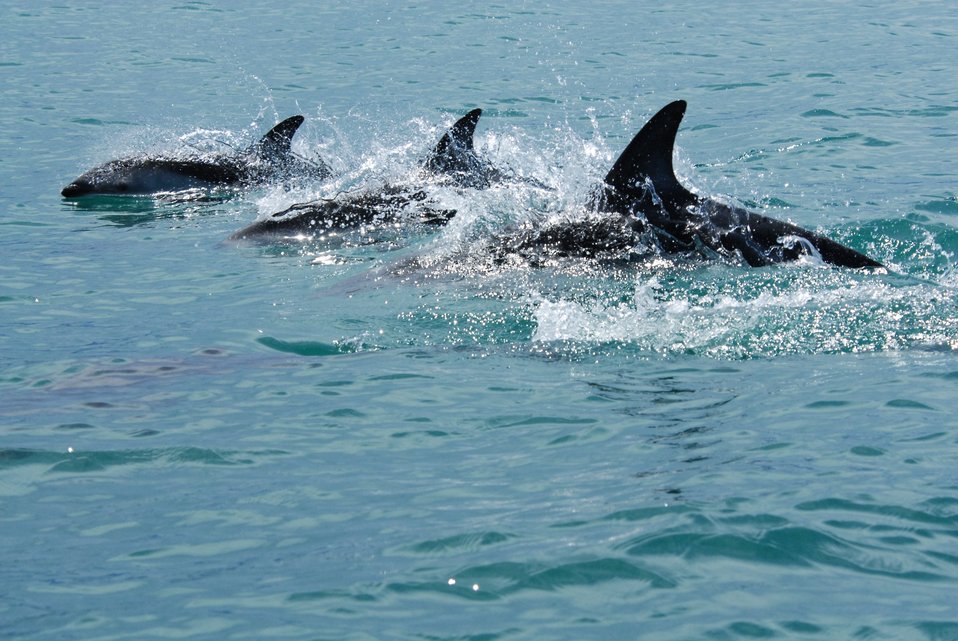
Dusky dolphin (Lagenorhynchus obscurus)